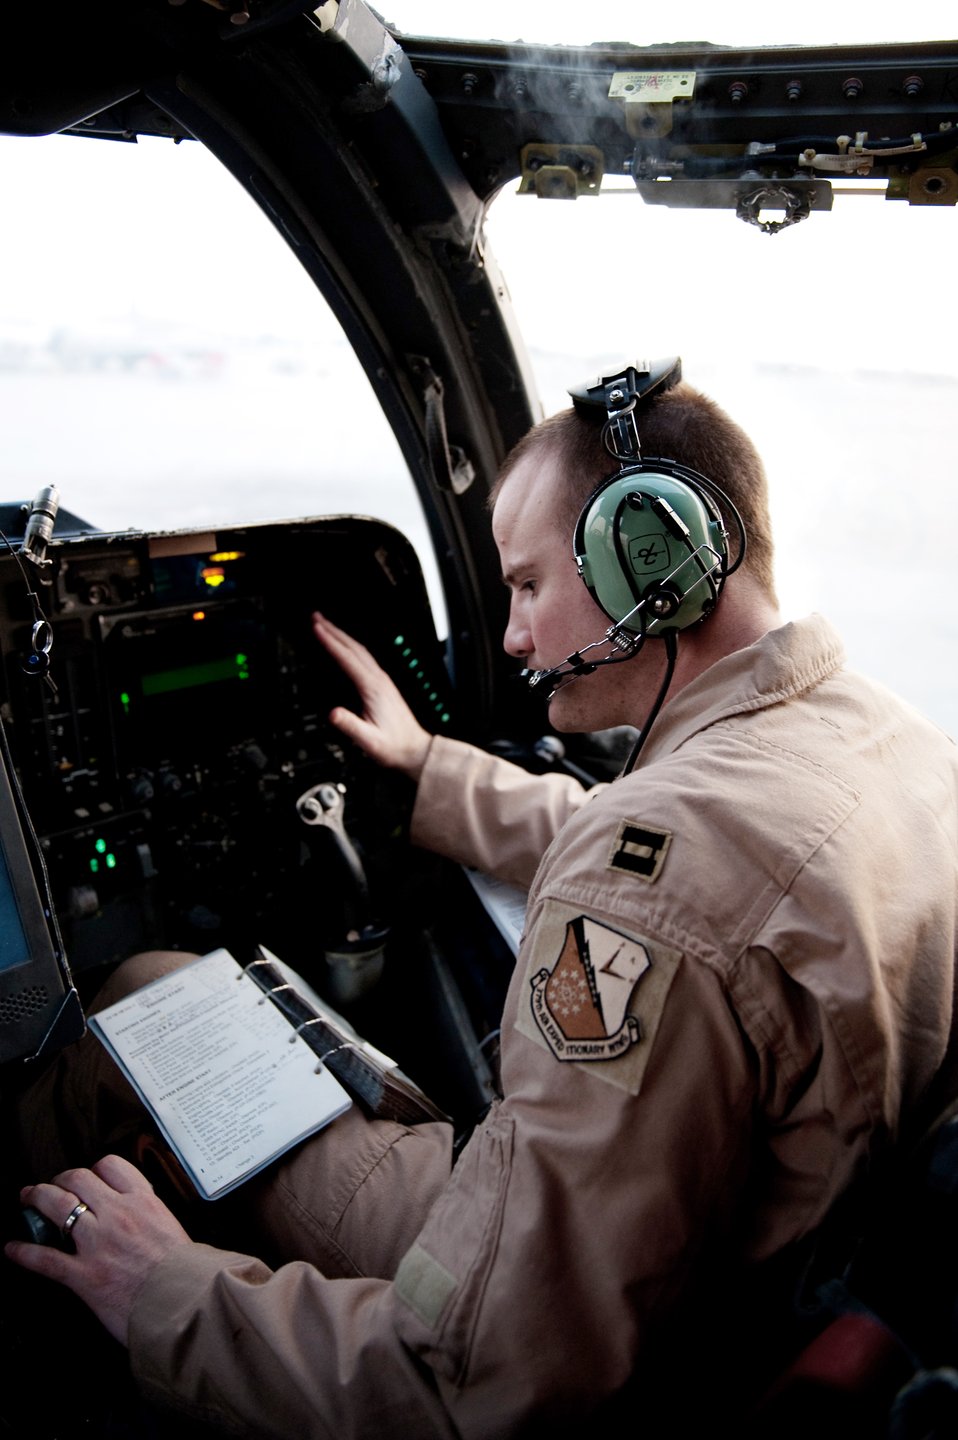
Checking out the B-1B for combat

Capt. Tim Menges, 37th Expeditionary Bomb Squadron co-pilot, performs preflight checks on a B-1B Lancer Nov. 11, 2009, at an air base in Southwest Asia. The multi-mission B-1 is the backbone of America's long-range bomber force. Captain Menges is deployed from Ellsworth Air Force Base, S.D., in support of operations Iraqi Freedom and Enduring Freedom.